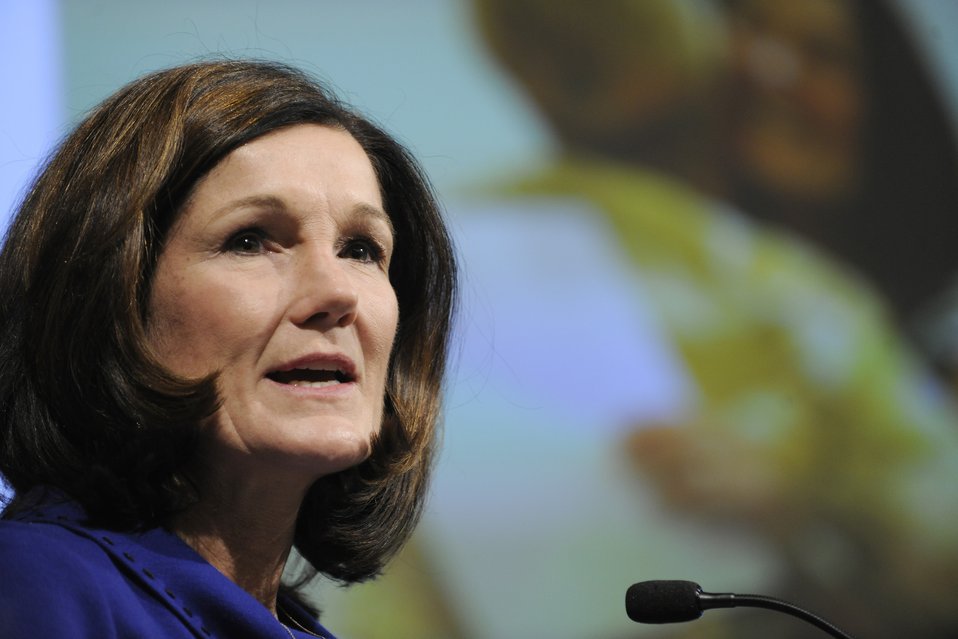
Caring for People

Lt. Col. Gregory Laffitte, from the Air Force Manpower, Personnel and Services directorate, provides Airmen fitness highlights at the Caring for People Forum at Joint Base Andrews, Md., on Sept. 26, 2012. This is the fourth annual forum which provides strategies for commanders, leaders and care professionals to help Airmen and their families.